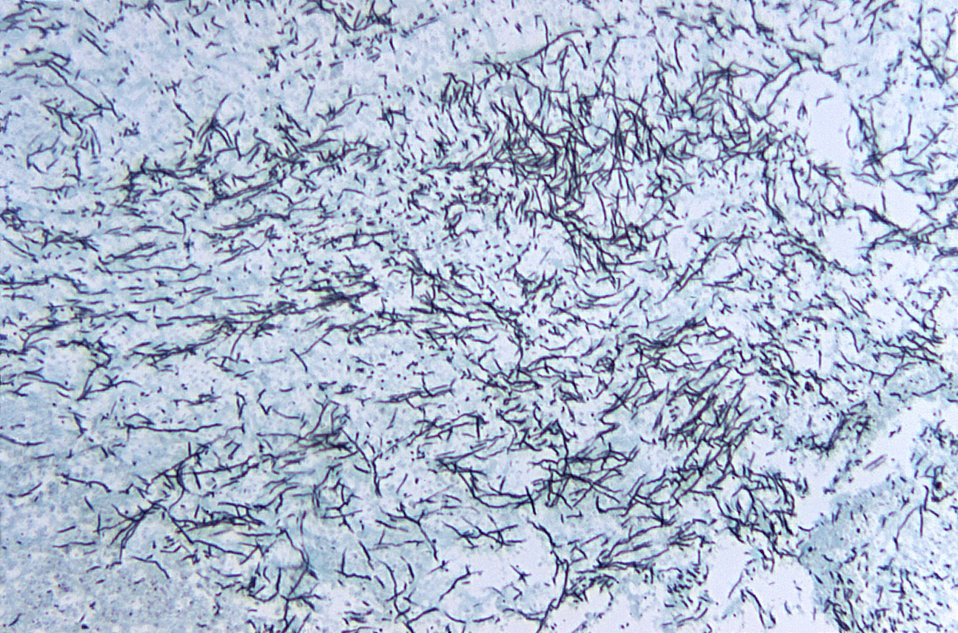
Magnified 125X, this photomicrograph depicted numbers of mycelia of Ochroconis constricta, fungi, formerly known as Scolecobasidium constrictum, which were present in this kidney tissue sample of an infected trout.